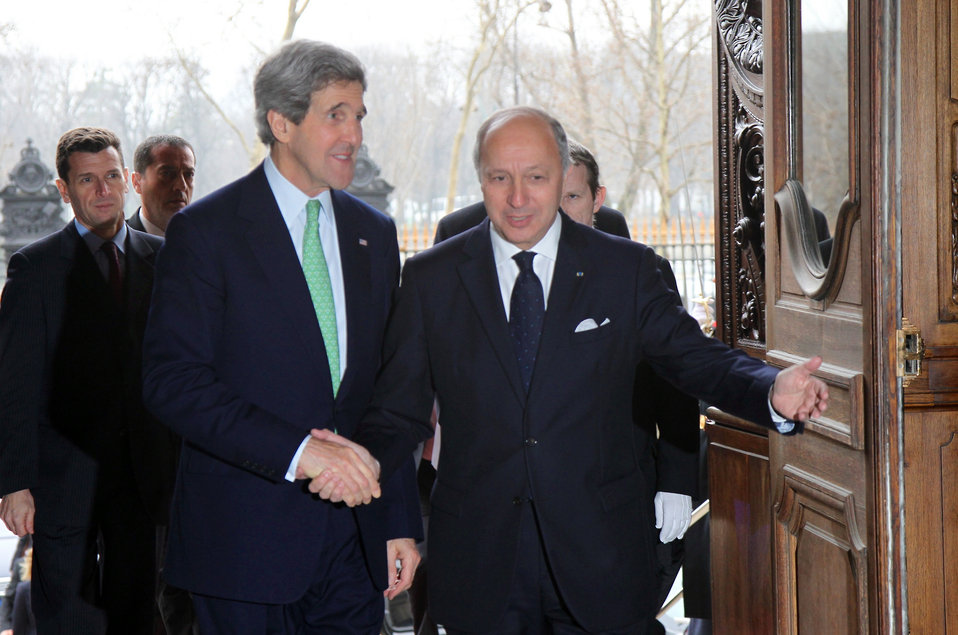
French Foreign Minister Fabius Greets Secretary Kerry

French Foreign Minister Laurent Fabius greets U.S. Secretary of State John Kerry at the entrance to the Ministry of Foreign Affairs in Paris, France, on February 27, 2013.